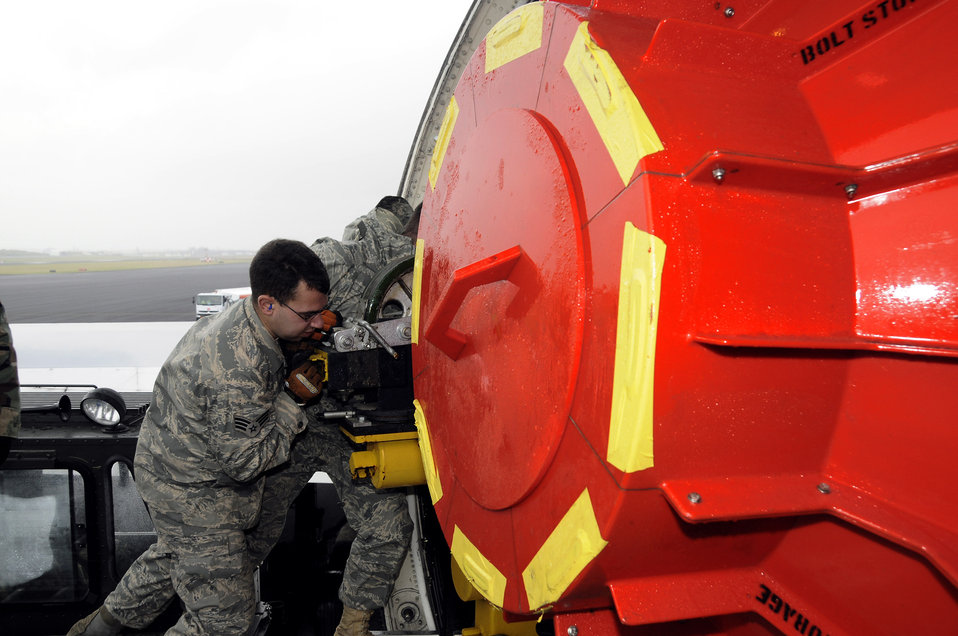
Lajes Field Airmen help disabled French aircraft

Senior Airman Joseph Harrison and Master Sgt. Eric Pieper assist in loading a defective engine into an Air France 747 cargo plane Jan. 13 at Lajes Field, Azores. Base members assisted the Portuguese and Air France officials in unloading a new engine for an Air France 777 passenger aircraft that made an emergency landing here Jan. 4. Airman Harrison and Sergeant Pieper are assigned to the 729th Air Mobility Squadron.